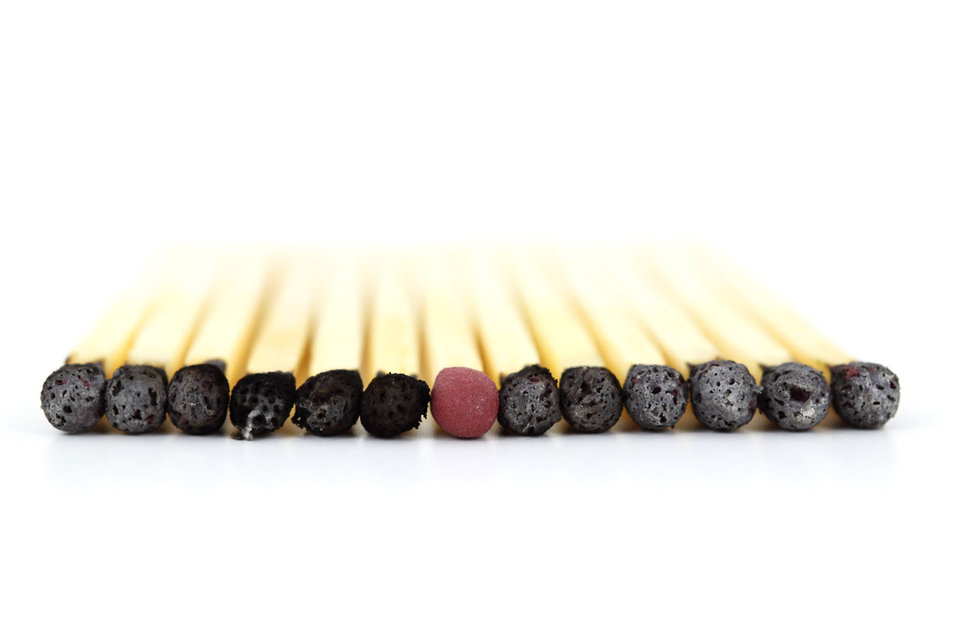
Standing out from the crowd

A match standing out from the crowd.